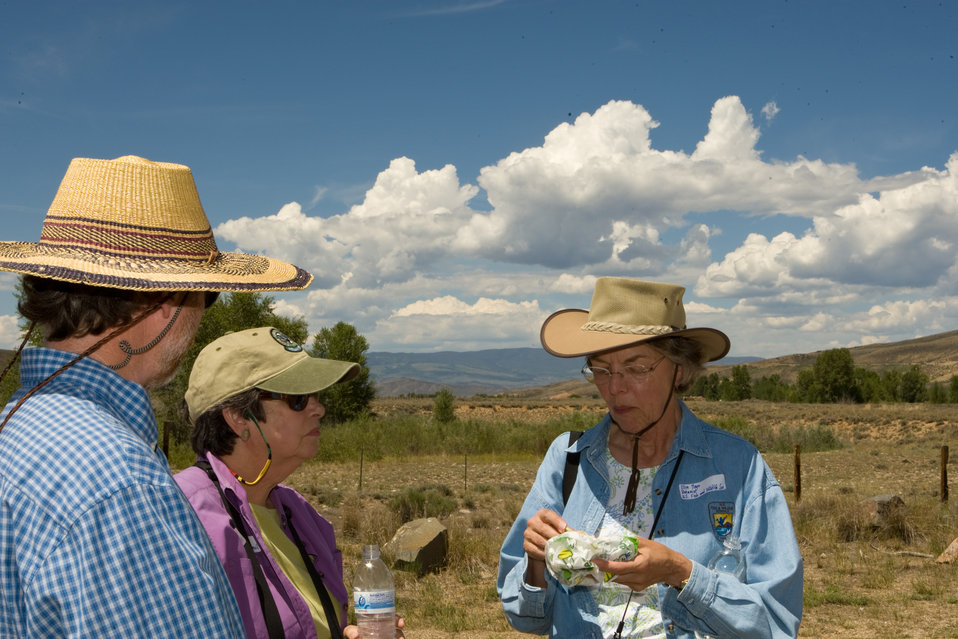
Colorado Rare Plant Conservation Initiative

The Colorado Rare Plant Conservation Initiative (RPCI) is a partnership of 23 statewide and regional agencies, private organizations, and academic institutions working to conserve 121 rare plants in Colorado. As part of these efforts the group developed the Colorado Rare Plant Conservation Strategy, developed Best Management Practices to reduce energy development impacts, addressed climate change, and developed focused strategies for the conservation of individual species at eight priority landscapes. The group has also worked to coordinate volunteer efforts for plant conservation across the state.